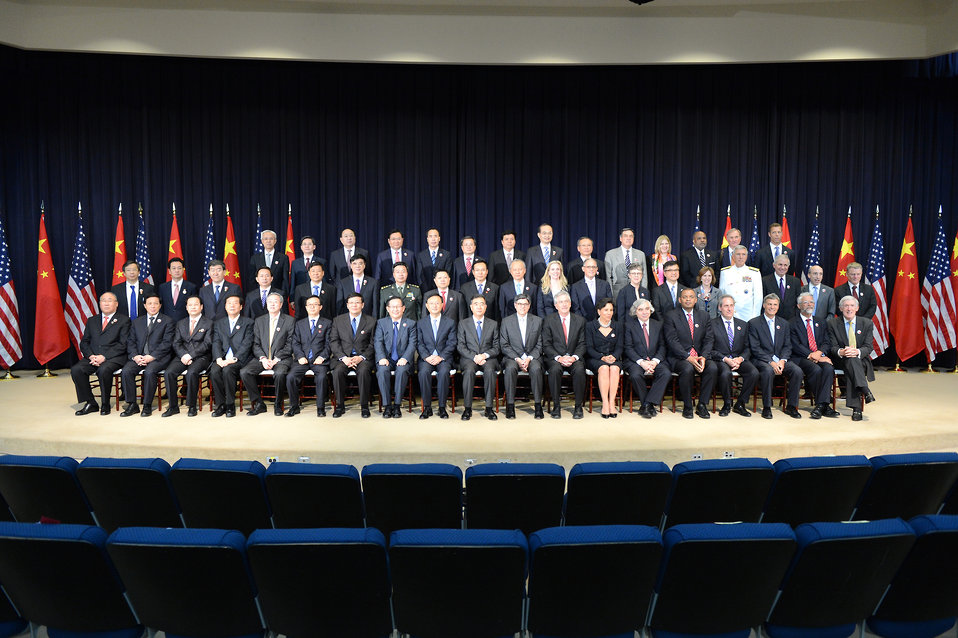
U.S. and Chinese Leaders Pose for a Family Photo

U.S. and Chinese leaders pose for a photograph during the fifth round of the U.S.-China Strategic and Economic Dialogue at the Harry S Truman Building in Washington, D.C., July 10, 2013.